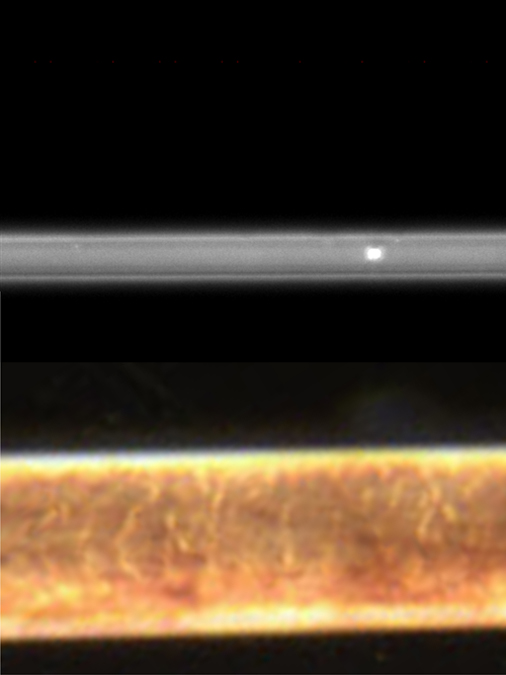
Lab-on-a-chip; Micro Microwave

Photomicrograph of the NIST micro microwave oven's miniature heating chamber (top) containing fluid and a single mouse cell (about 5 micrometers, or millionths of a meter) in diameter. A human hair (about 50 micrometers in diameter) is seen in the photo (below) as a size reference.